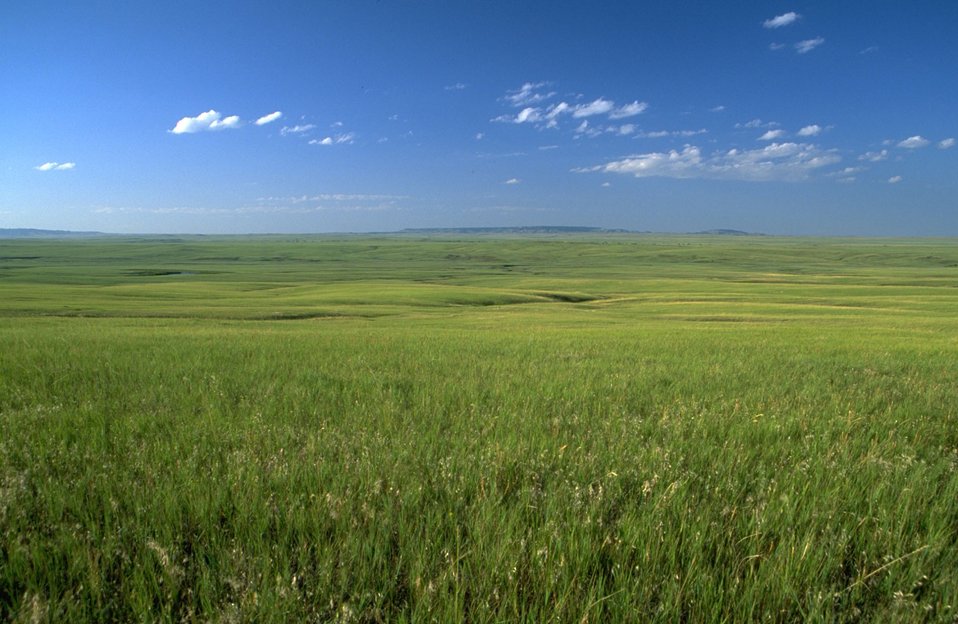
Grassland Vista